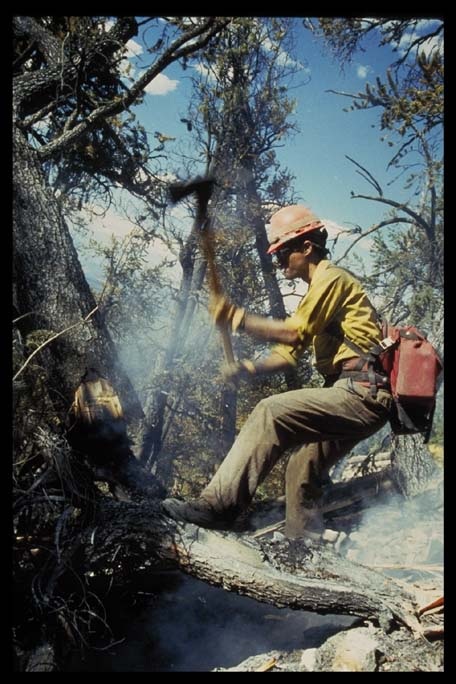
Wildland firefighter